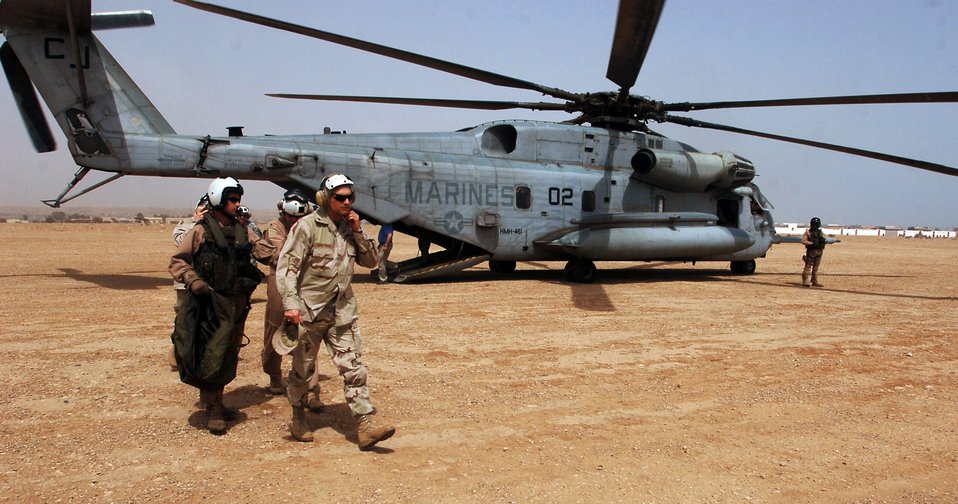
CJTF-HOA relationship with Djiboutians impresses CAPSTONE officers

U.S. military flag officers arrive in Obock District, Djibouti, to tour the Combined Joint Task Force-Horn of Africa-led construction sites of a slaughter house and pier, as well as see a medical facility, which was dedicated in December. The senior leaders are touring U.S. Central Command as part of the overseas field study in the CAPSTONE course designed for newly appointed generals.